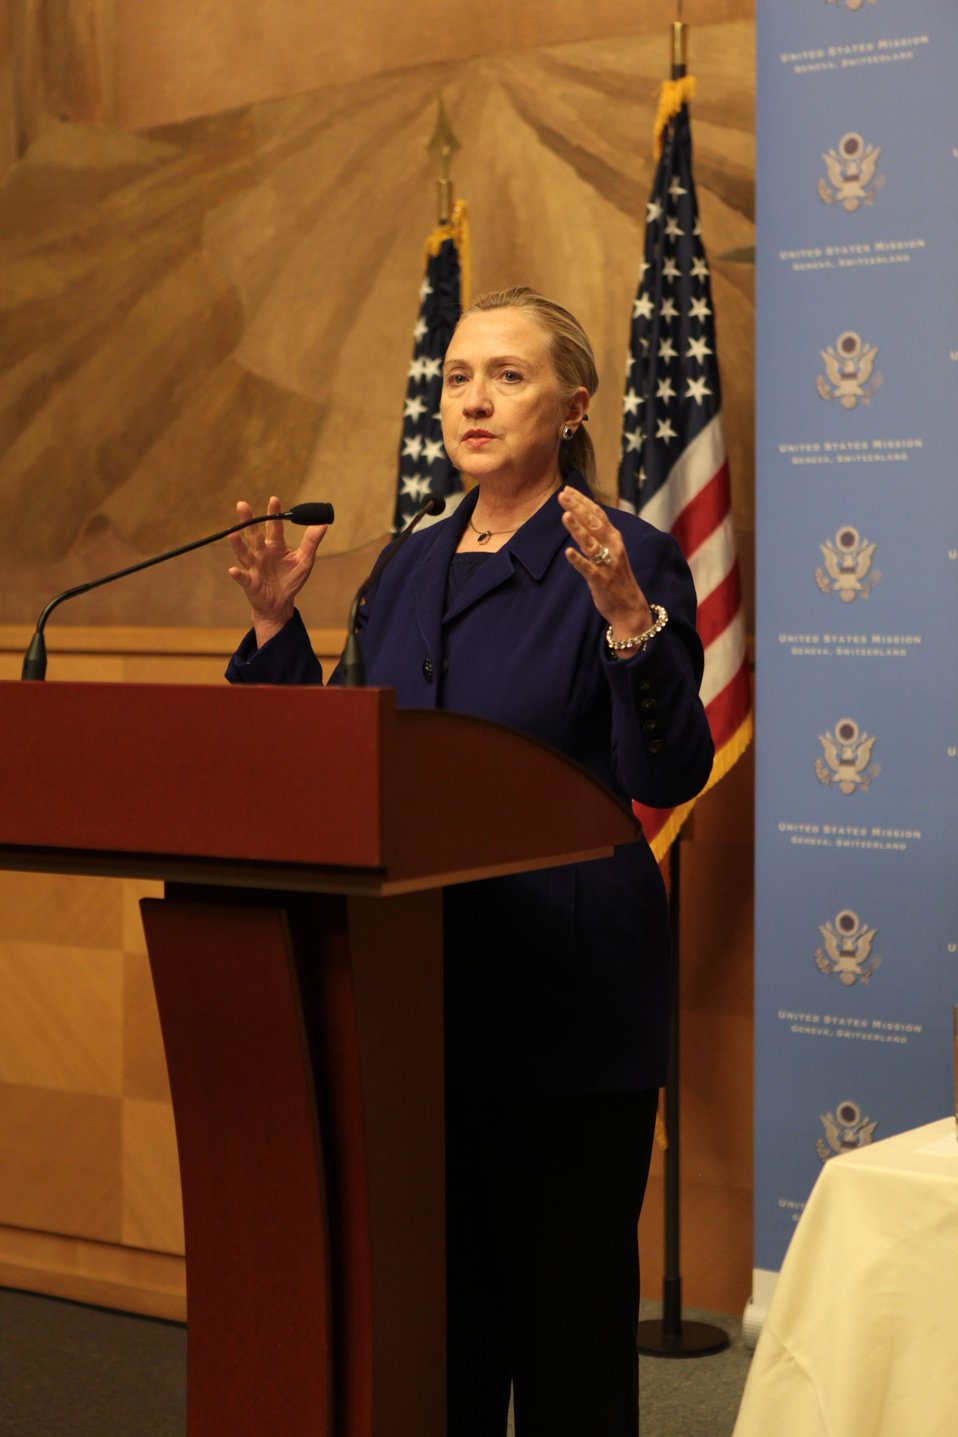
Secretary Clinton Speaks With LGBT Activists and Supporters

U.S. Secretary of State Hillary Rodham Clinton speaks with LGBT activists and supporters from the diplomatic corps at the United Nations Office at Geneva in Switzerland on December 6, 2011.